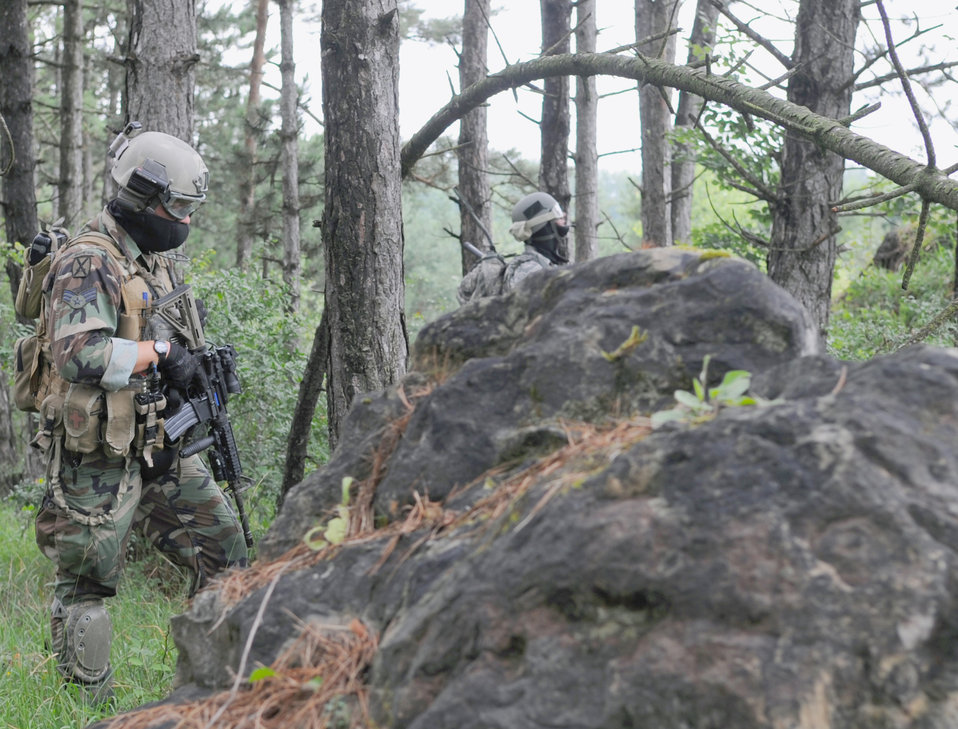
Close air support training

Senior Airman Rich Garrett walks to set coordinates for an